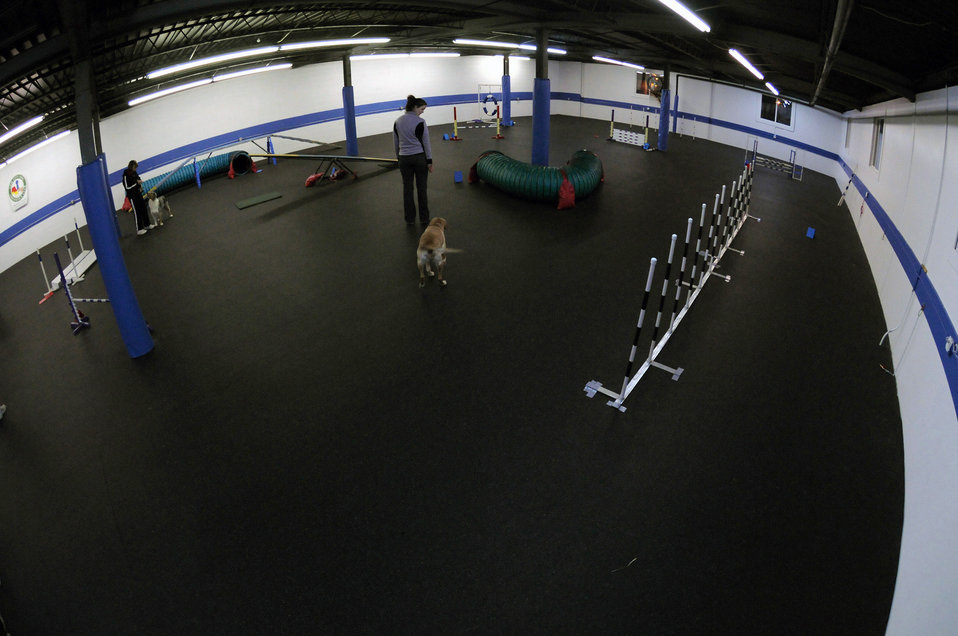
Rags to Riches in the American Heartland

First Lt. Heather Greatting goes over basic obedience commands Feb. 11 with Zoey, a 9-year-old Labrador retriever she obtained from a Labrador rescue center. The lieutenant is a space intelligence surveillance and reconnaissance systems employment analyst with the National Air and Space Intelligence Center at Wright-Patterson Air Force Base, Ohio.